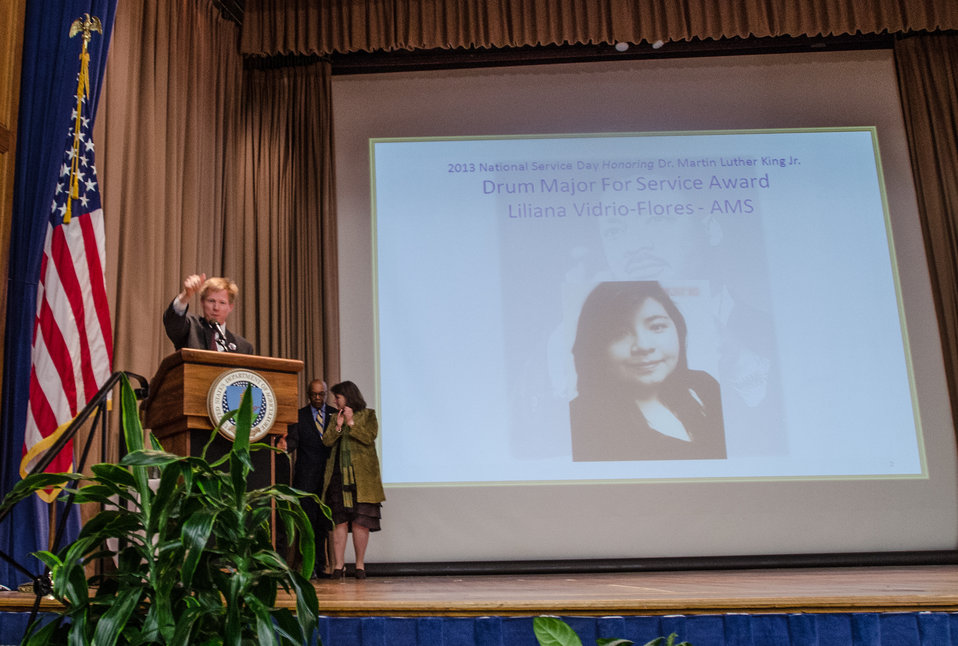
U.S. Department of Agriculture (USDA) Director Faith Based and Neighborhood Partnerships Max Finberg, left, provides some insight to the achievements of Agricultural Marketing Service (AMS) Pathways Student Trainee Liliana Vidrip-Flores, a recipient of the Dr. Martin Luther King, Jr. National Service Day Drum Major Service Award, Flores was not able to receive it in person, in the Jefferson Auditorium, Washington, D.C. on Tuesday, Jan. 15, 2013 (L to R Agriculture Deputy Secretary Kathleen Merrigan, USDA Animal and Plant Health Inspection Service (APHIS) Administrator Dr. Gregory Parham, and Agriculture Assistant Secretary for Civil Rights Dr. Joe Leonard).